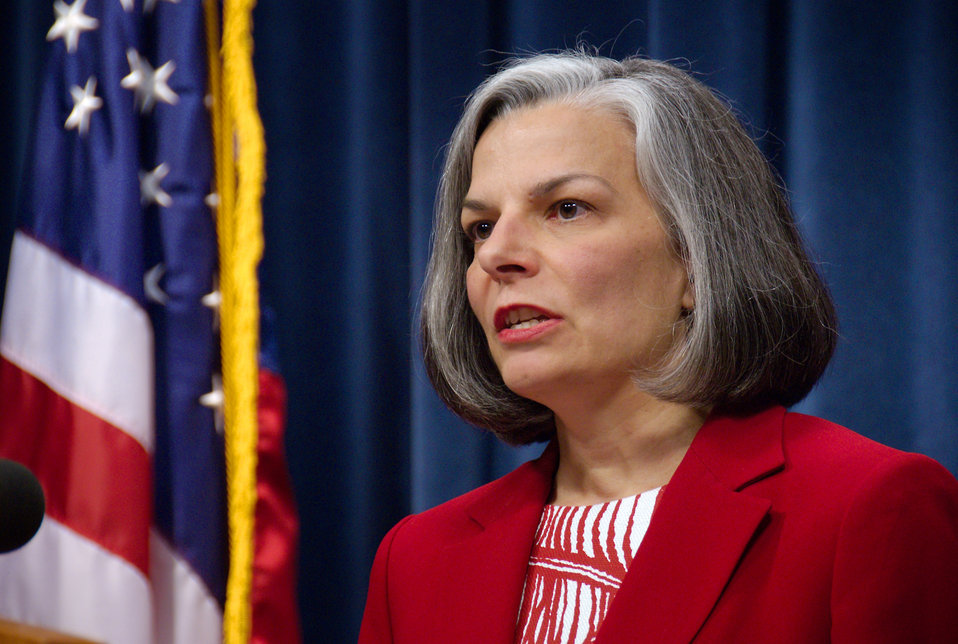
This 2007 image depicted former Centers for Disease Control Director (2002 - 2008), Dr. Julie Gerberding, conducting a press briefing regarding the organization's public health investigation into who may have been exposed to an extensively drug-resistant tuberculosis (XDR-TB) infected person. The information release included the action and steps that the CDC was taking in response to a case of XDR-TB in a United States citizen who'd undertaken international travel. XDR-TB is a recently defined subtype of a multi-drug resistant TB, which can cause severe illness and death.